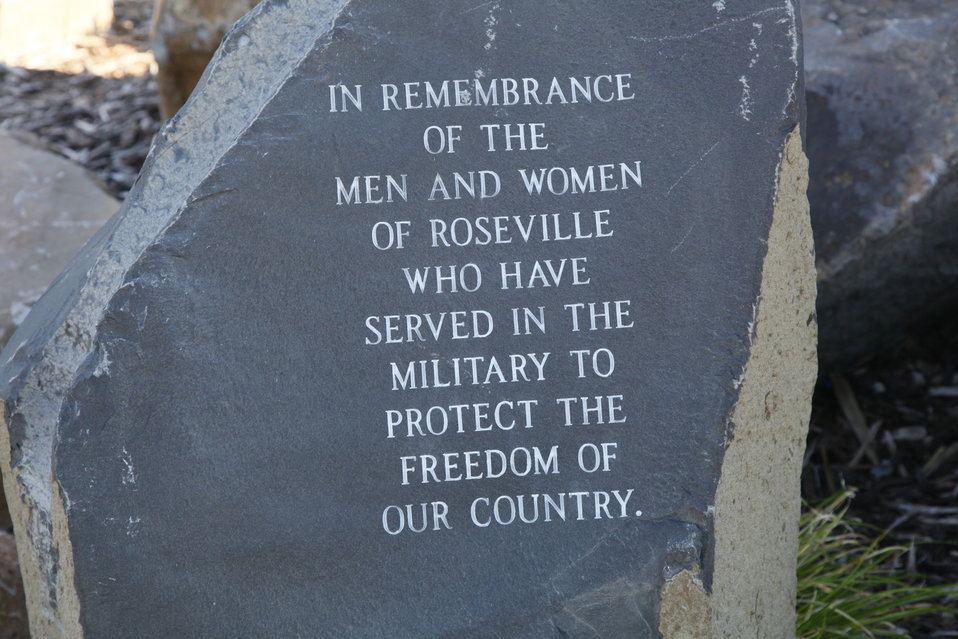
SACRAMENTO, Calif. (Nov. 29, 2010) – A memorial etched in stone to the veterans of the city of Roseville sits in front of the Veterans Plaza in Roseville, Calif. The plaza is home to a new Armed Forces Career Center designed by the U.S. Army Corps of Engineers Sacramento District. The collocated Army, Navy, Air Force and Marines career center opened in September.